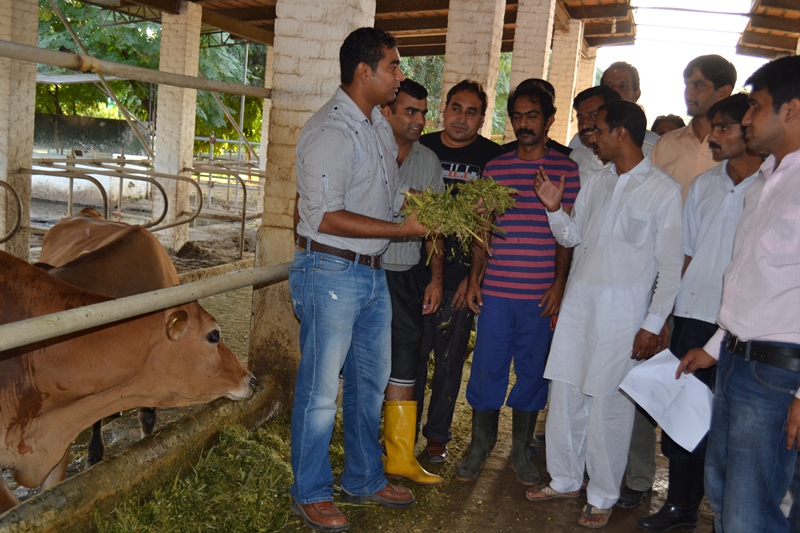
3 - First batch of Dairy Project farm manager trainees attending Farm Managers Training by USAId Dairy Project